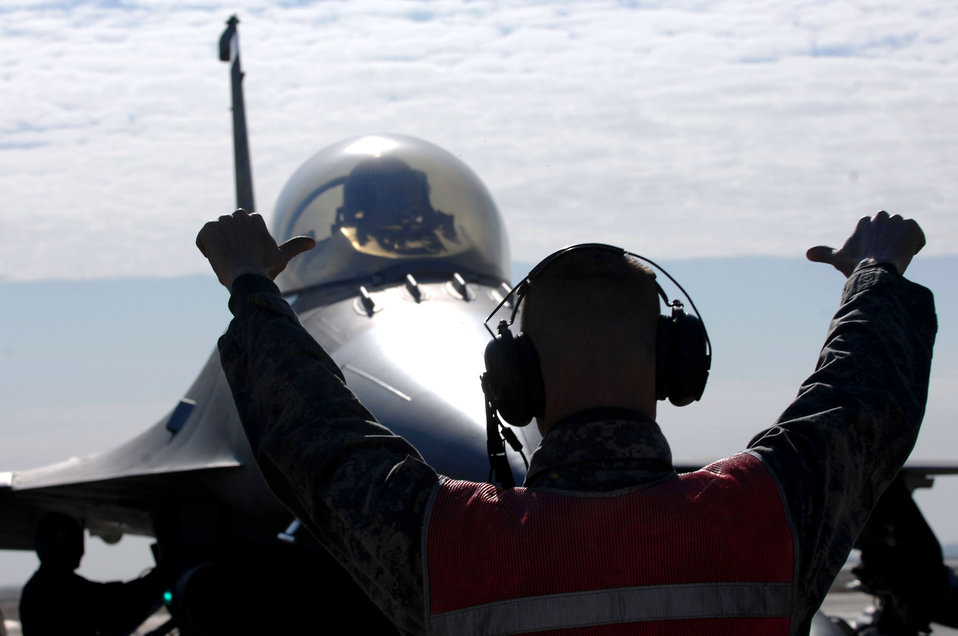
Feb. 5 airpower summary: F-16s support coalition forces in Iraq

Air Force Staff Sgt. Jeremy Lewis, a crew chief with the 332nd Expeditionary Aircraft Maintenance Unit, gives a signal to Capt. Travis Keenan, a pilot with the 22nd Fighter Squadron pilot, before de-arming his F-16 Fighting Falcon aircraft at Balad Air Base, Iraq.